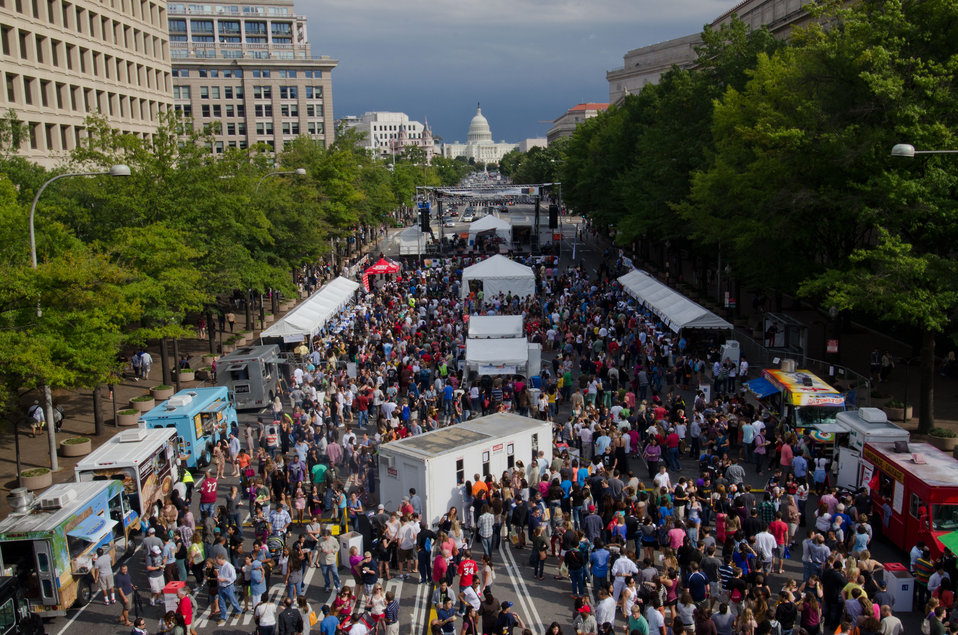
The Taste of D.C., event highlights more than 70 eateries, 30 specialty beer providers, the United Service Organization (USO) Metropolitan Washington, and live bands. It is anticipated that more than 500,000 people will attend over the course of the three-day event, which extends from the White House to the Capitol, along Pennsylvania Ave. in Washington D.C. on Saturday, October 6, 2012. Agriculture Food Safety and Inspection Service specialists present talks and cooking demonstrations. Agriculture’s mobile Discovery Zone is on hand to educate children and parents about the four main principals of food safety – clean, separate, cook and chill.